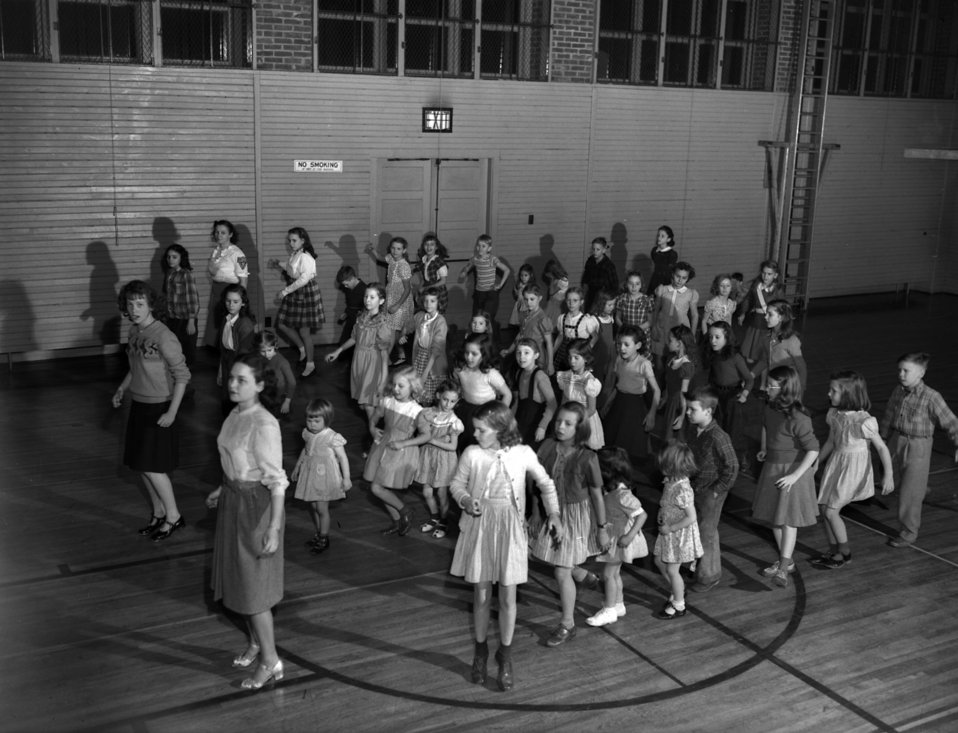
Tap Dancing, Elm Grove School (Oak Ridge, TN 1948)

1-19-1948 004255-2a photo by Ed Westcott